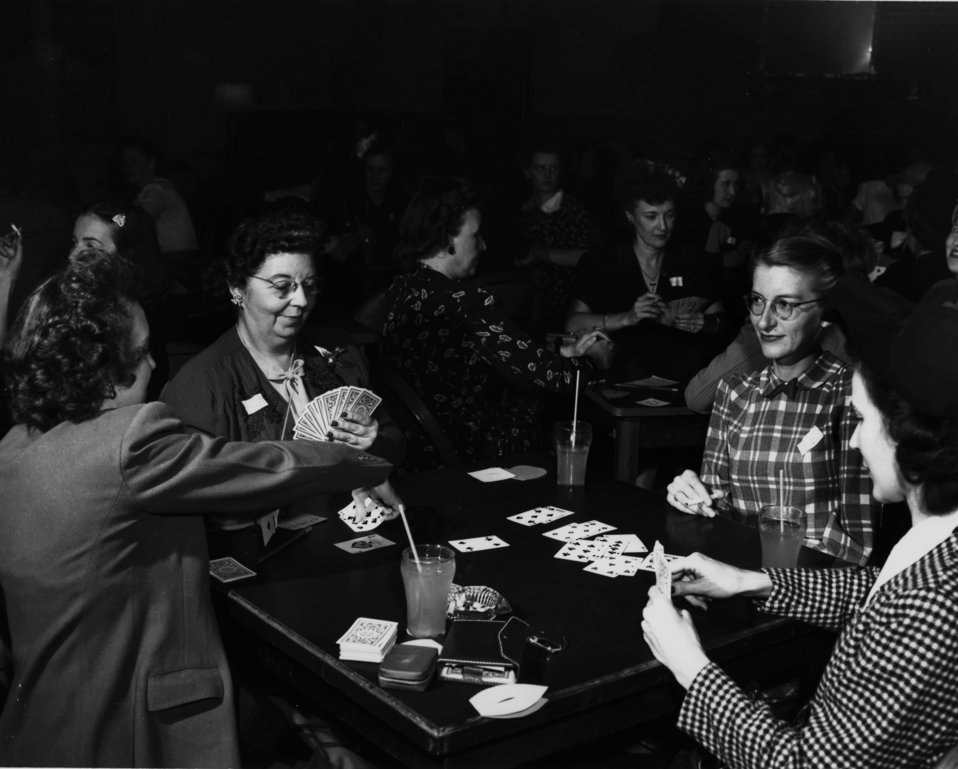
Carbide Bridge Club Oak Ridge

1188 DOE photo Ed Westcott 1945 Oak Ridge Tennessee